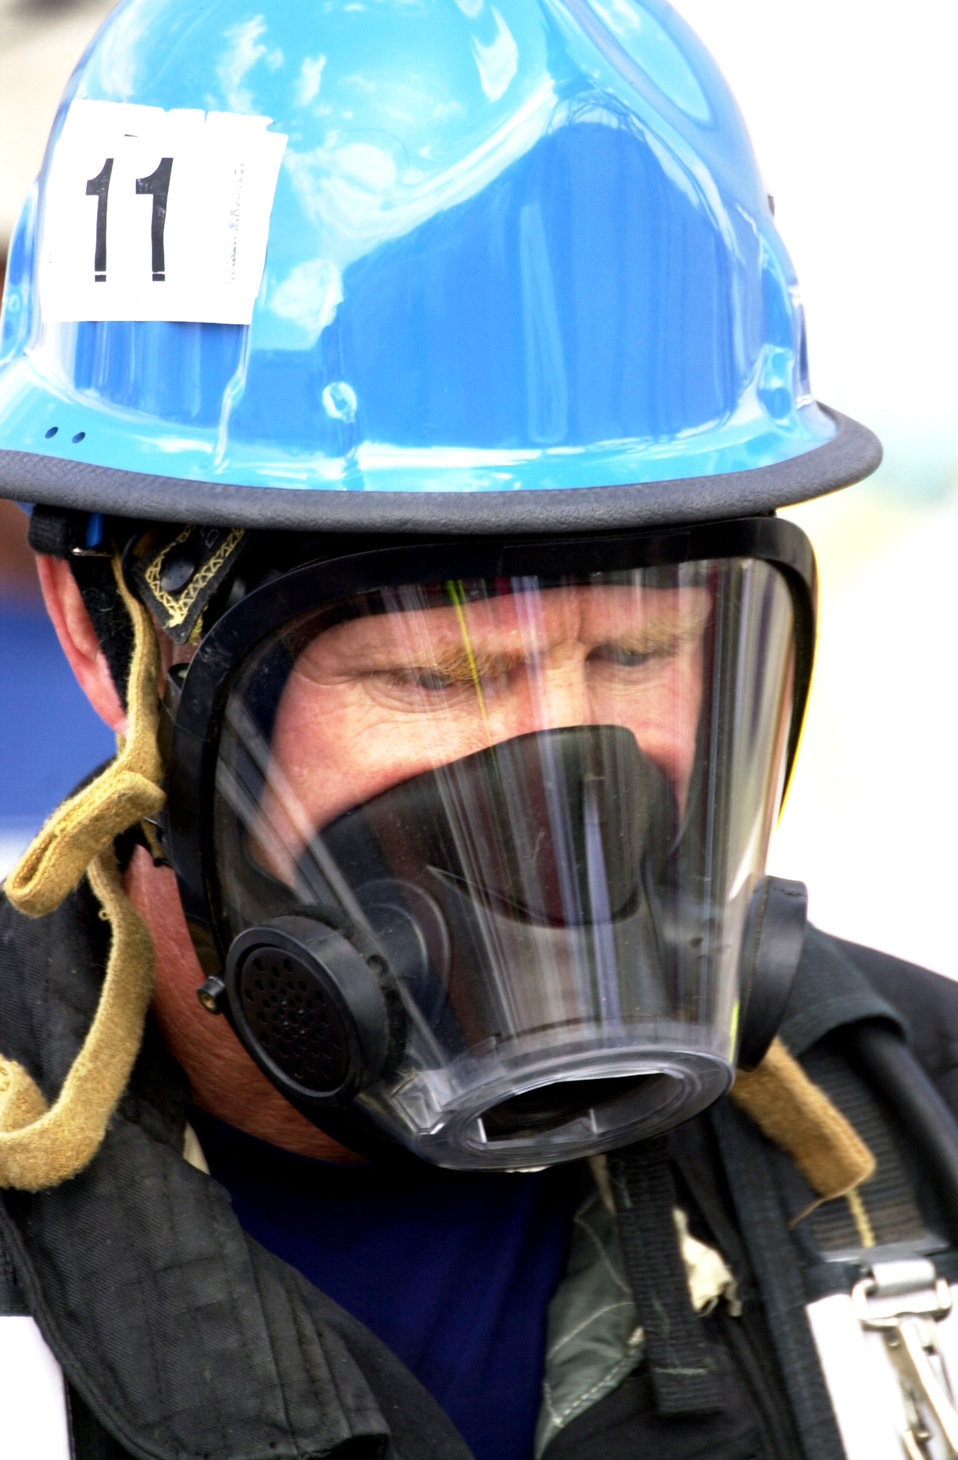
Firefighter combat challenge

EL PASO, Texas -- Dave Chiodo waits for his turn to run the challenge course at the Scott Firefighter Combat Challenge here Oct. 4. Chiodo is a civilian firefighter at Travis Air Force Base, Calif., and at age 50 is the oldest member of Team Travis.